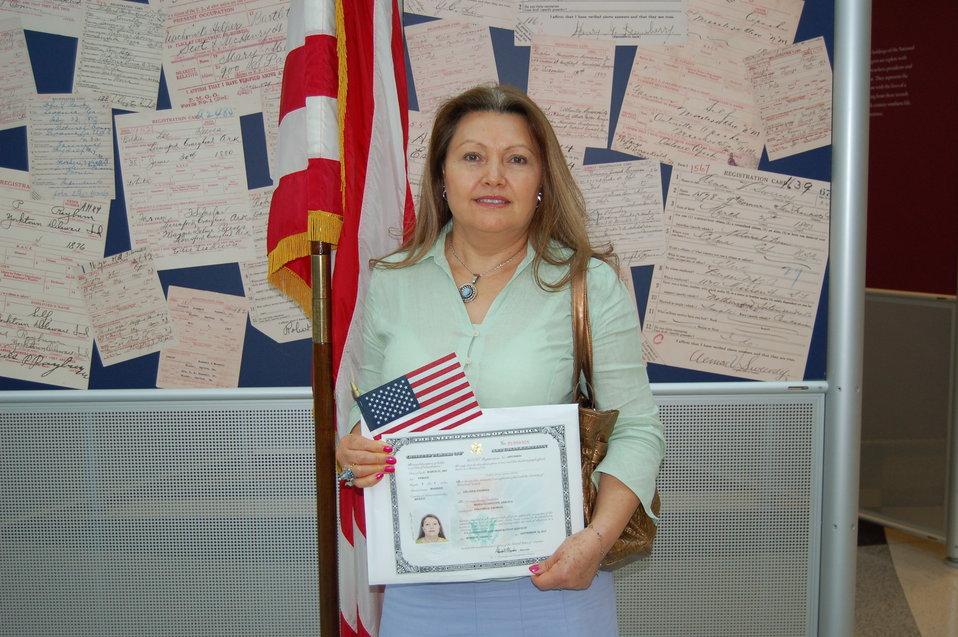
New Citizens